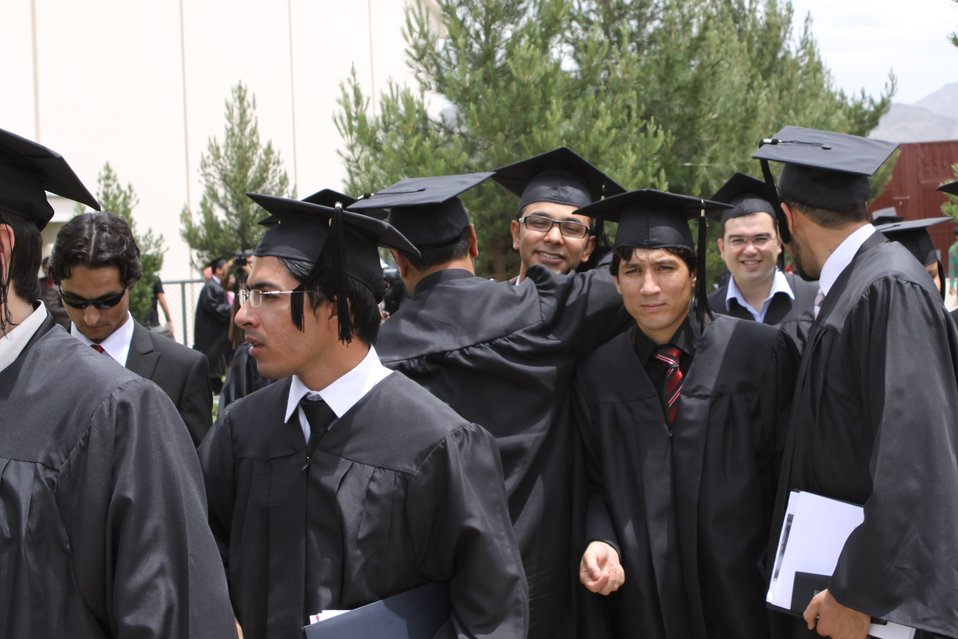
100526 AUAF Graduation 340